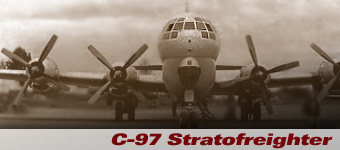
C-97 Stratofreighter history spotlight graphic